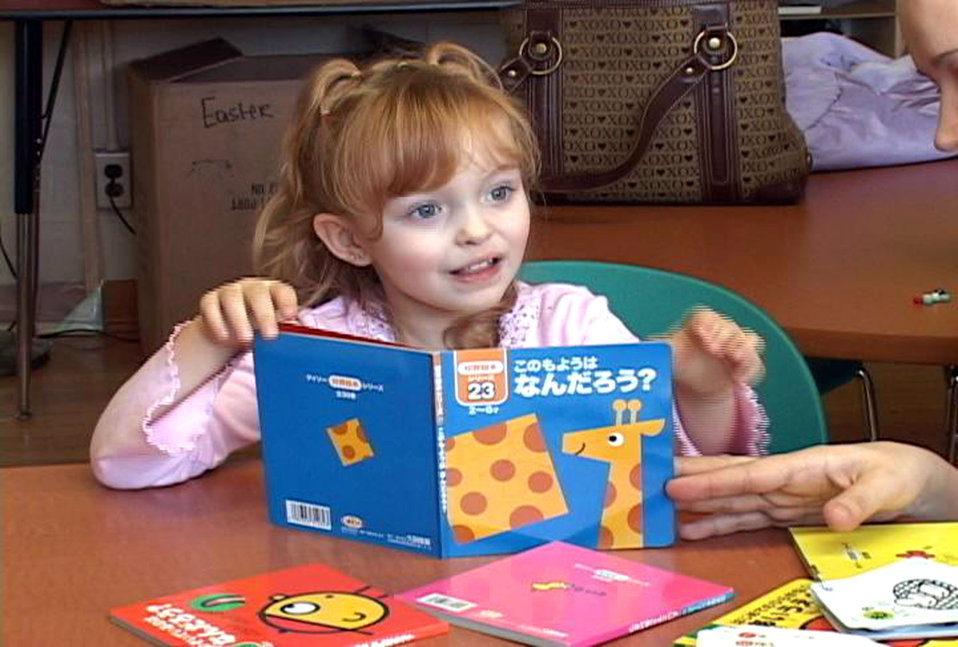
Misawa Air Base youth learn basics of Japanese culture

Three-year-old Alyssa Andrews is learning the Japanese language through a basic Japanese conversation class held in the Lunney Youth Center at Misawa Air Base, Japan. Other classes at the center include dance, martial arts, drama and other Japanese culture classes.